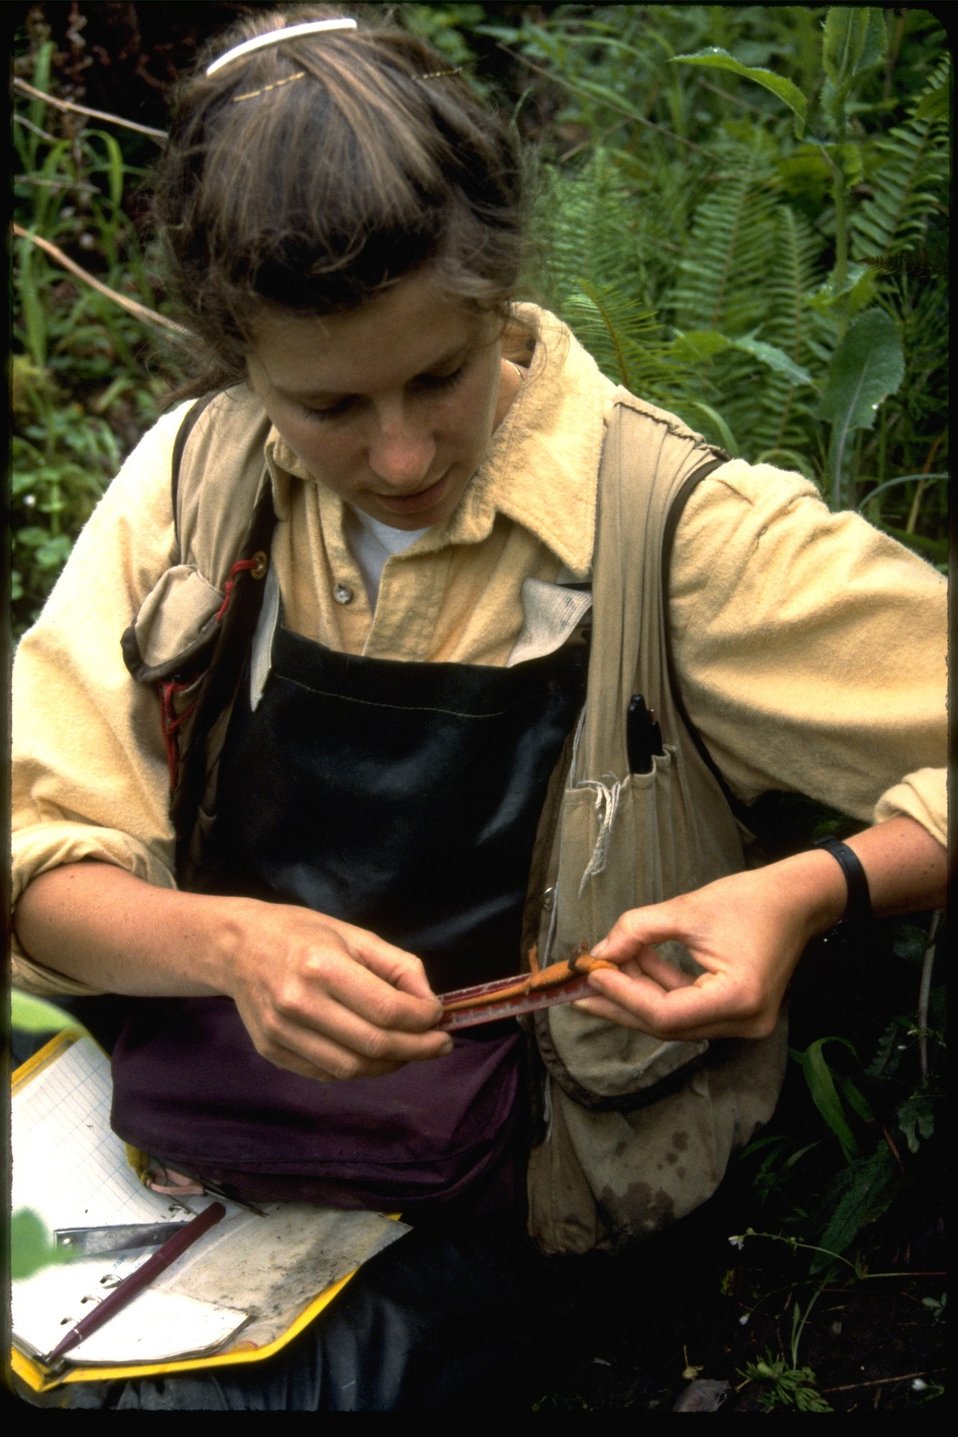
Field worker conducting an amphibian study.